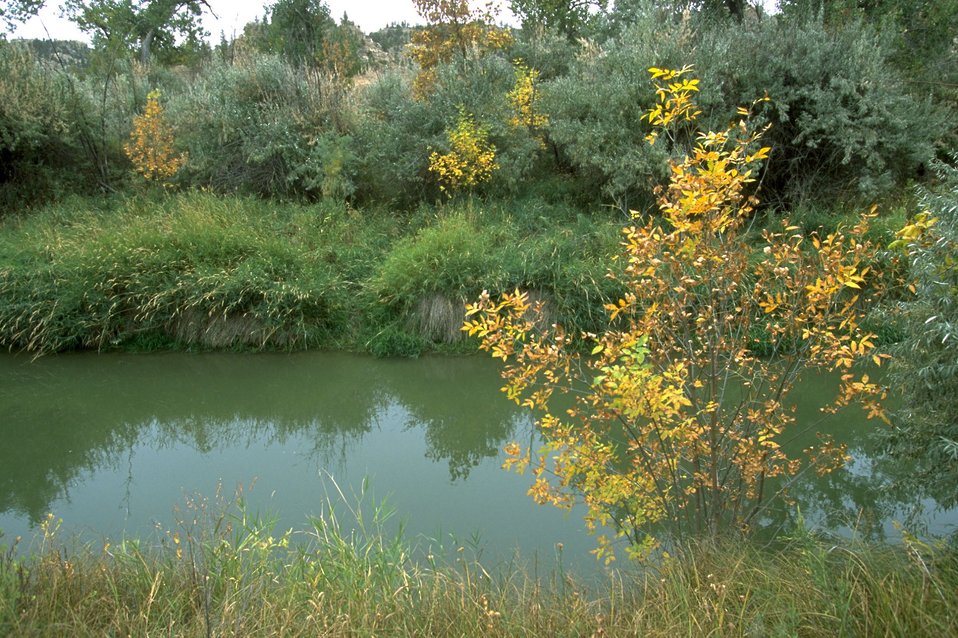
Tree turning to autumn colors along the bank of the Yellowtone River channel at Howrey Island Nature Trail